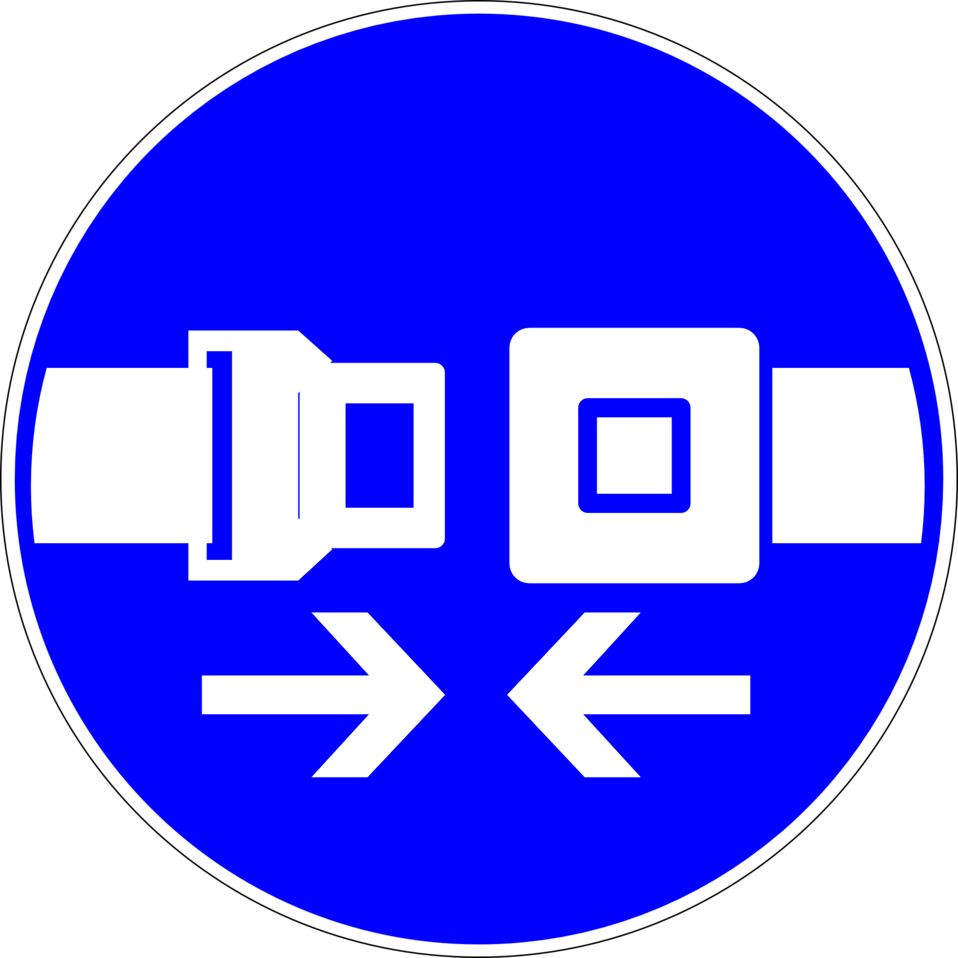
Deutsch: Sicherheitsgurt benutzen, Gebotszeichen D-M011 nach DIN 4844-2 Use safety belt, mandatory action sign D-M011 according to German standard DIN 4844-2